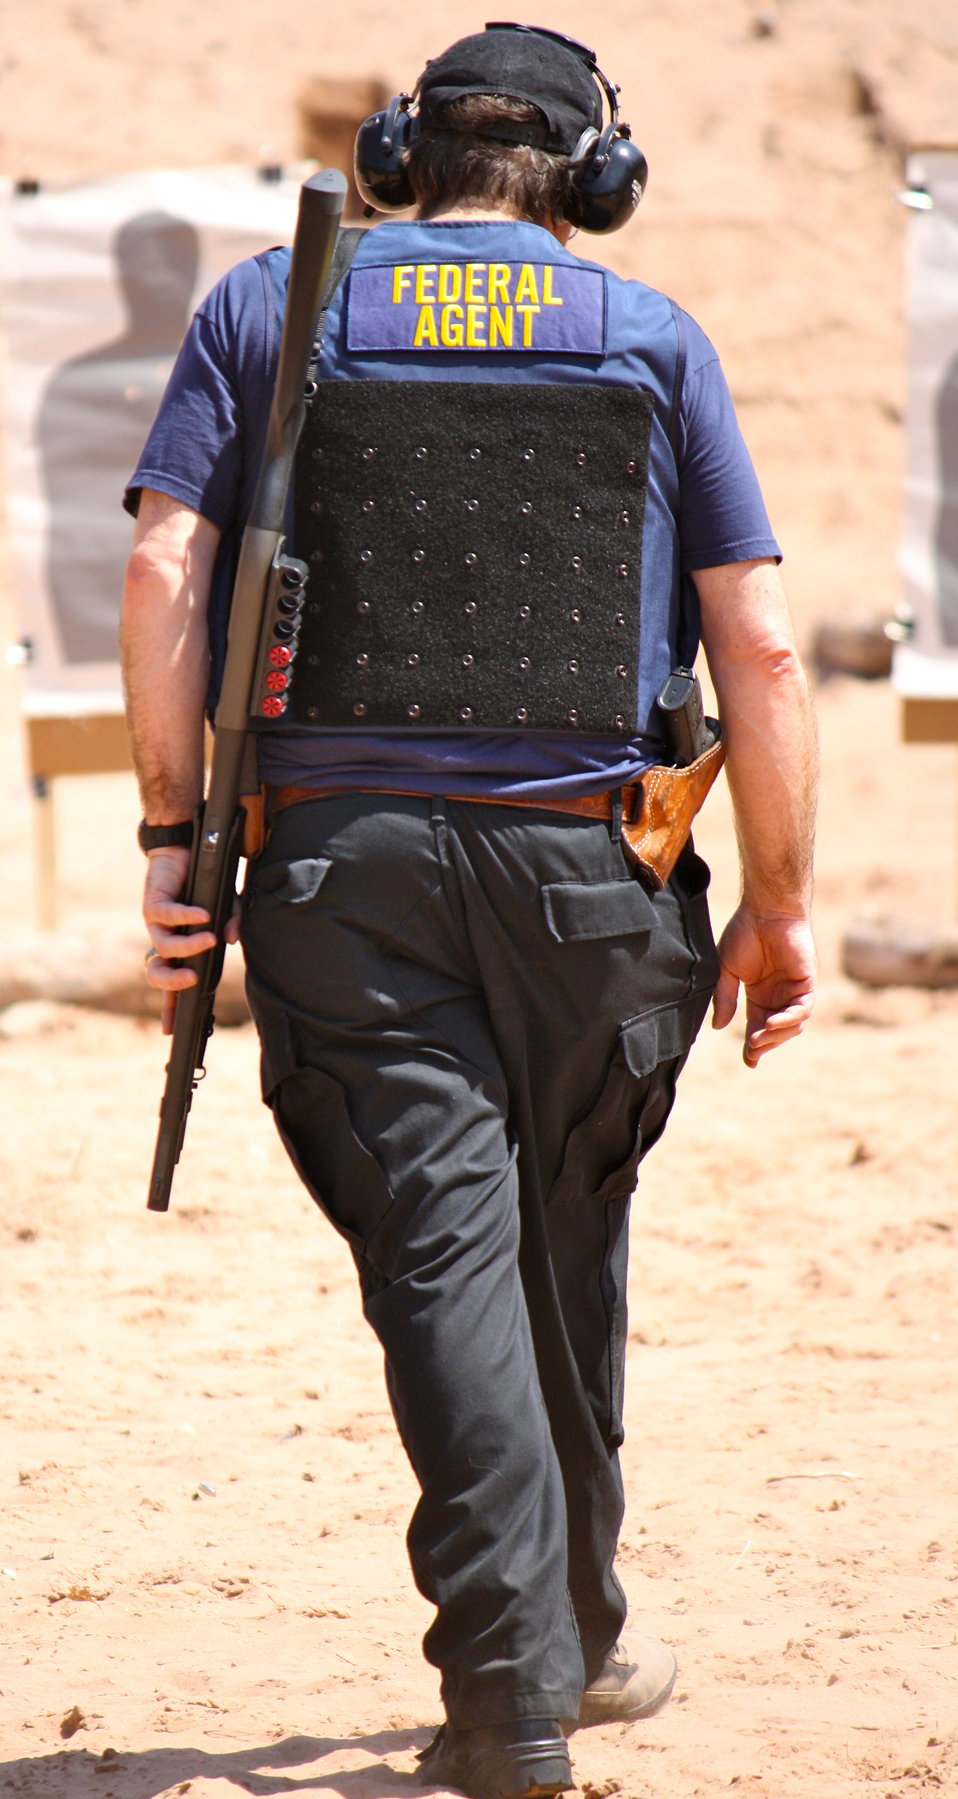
Agent Walking Towards Target

Law Enforcement target practice at outdoor shooting range in Glastonbury, CT.